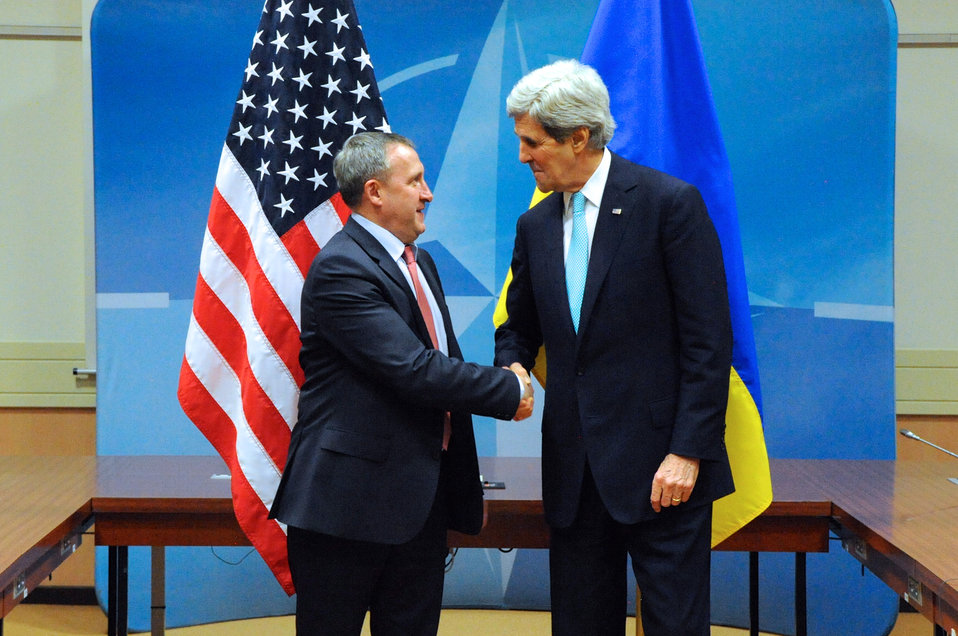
Secretary Kerry Meets With Acting Ukraine Foreign Minister Deshchytsia at NATO Session in Brussels

U.S. Secretary of State John Kerry shakes hands with Acting Ukraine Foreign Minister Andrii Deshchytsia before a bilateral meeting about his country on the sidelines of a NATO Ministerial Meeting in Brussels, Belgium, on April 1, 2014.